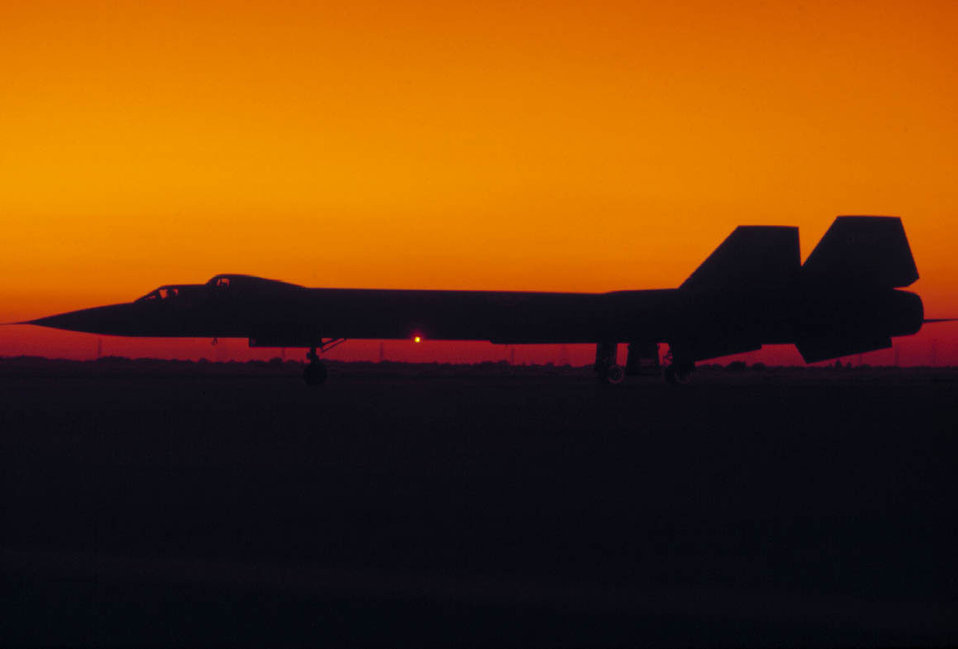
SR-71 back in action

The SR-71 flies at more than three times the speed of sound at altitudes in excess of 80,000 feet (approximately 15 miles high); for example, three times the speed of sound (Mach 3) is more than 2,000 miles per hour. Congress appropriated funds and directed the Air Force to recommission a small fleet of SR-71s, two A models and one B model. The aircraft were assigned to the 9th Reconnaissance Wing's Detachment 2 at Edwards Air Force Base, Calif., before retirement.